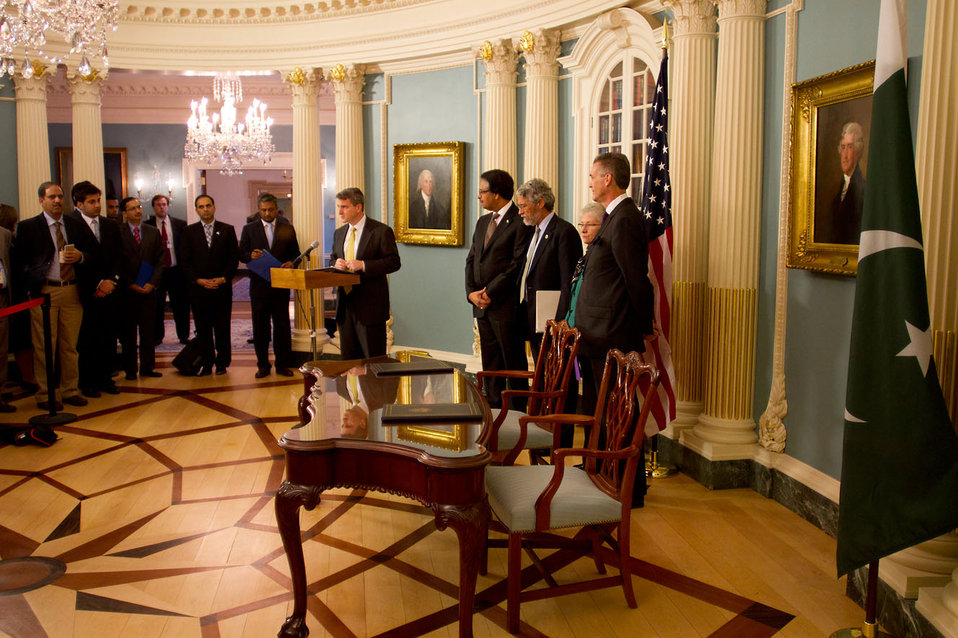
Deputy Special Representative Feldman Delivers Remarks Before the Signing of a U.S.-Pakistan Science and Technology Agreement Extension

Deputy to the Special Representative for Afghanistan and Pakistan (SRAP) Daniel Feldman delivers remarks before Assistant Secretary for Oceans and International Environmental and Scientific Affairs (OES) Dr. Kerri-Ann Jones and Pakistani Foreign Secretary Jalil Abbas Jilani sign a five-year extension of the U.S.-Pakistan Science and Technology Cooperation Agreement at the U.S. Department of State in Washington, D.C., on October 23, 2103. Also pictured is Director of the White House Office of Science and Technology Policy John P. Holdren.